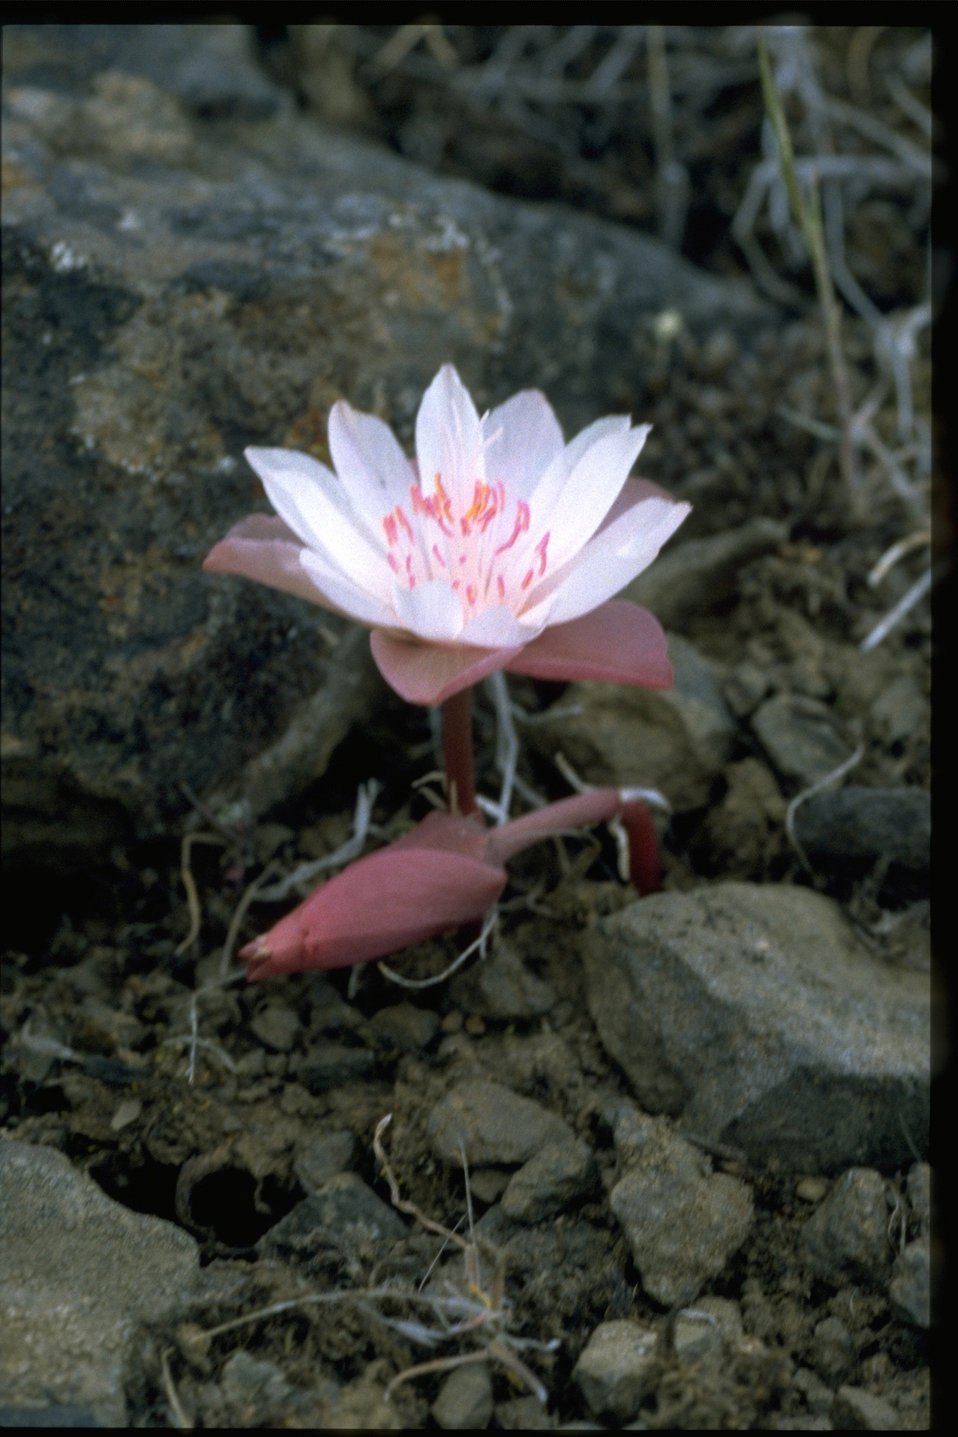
Medium shot of bitter root (Lewisia rediviva).